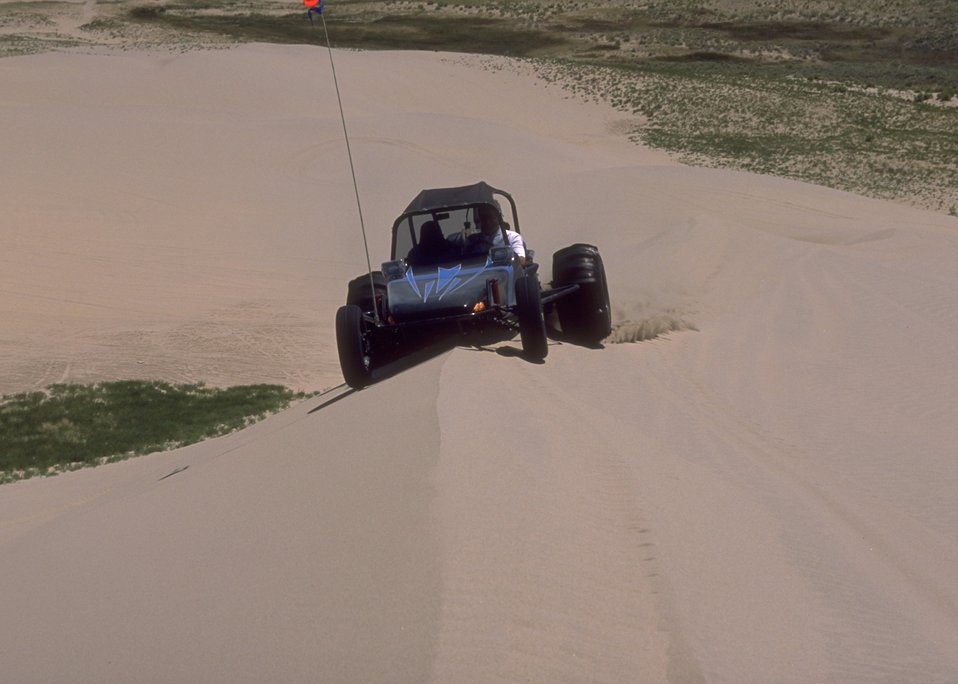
Sand Dunes OHV Area, RSFO.